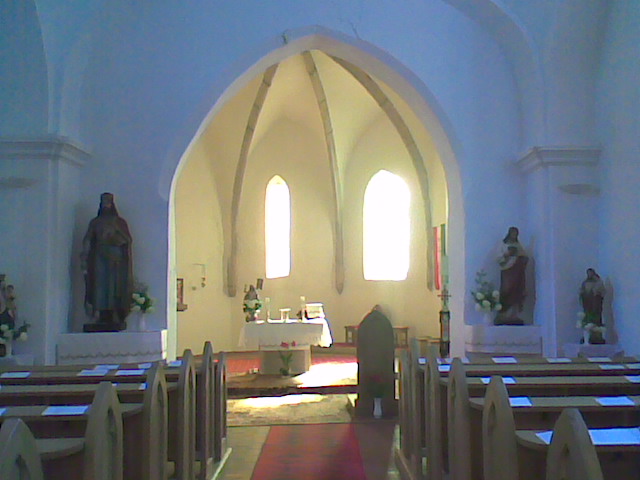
Magyar: A tiszasülyi Szent László-templom